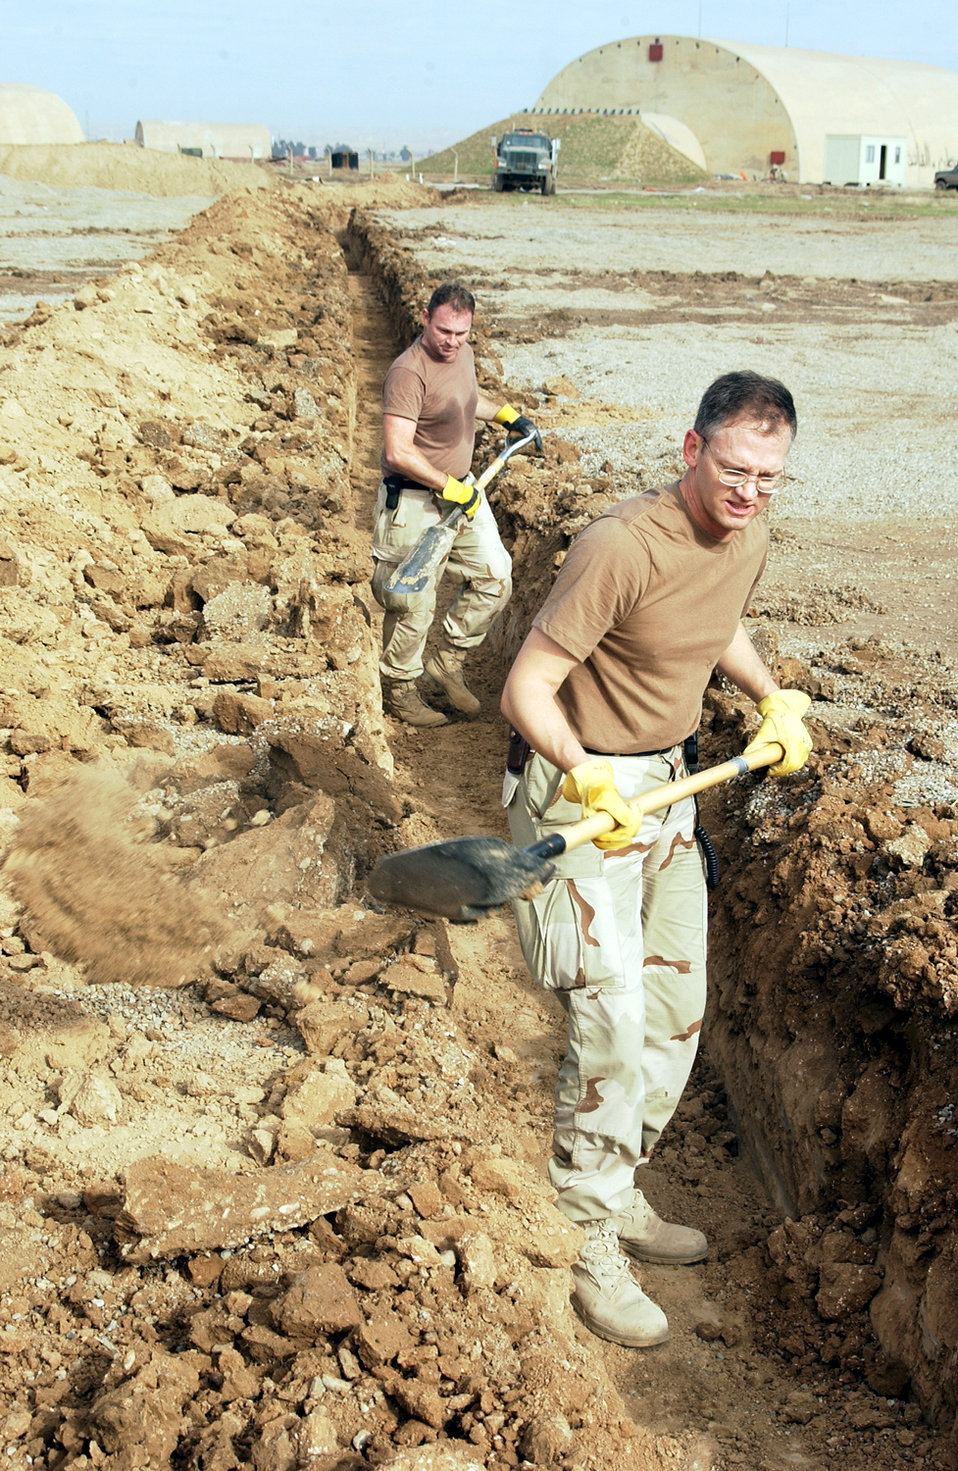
Entrenched

KIRKUK AIR BASE, Iraq -- Maj. Jeffrey Holifield (front) and Chief Master Sgt. Curtis Fike help bury fiber optic and copper cable here. Airmen from the 506th Expeditionary Communications Squadron have installed more than 45,000 feet of cable to 55 facilities to support telephone and computer network communications for deployed forces. Holifield is the 506th ECS commander and Fike is the squadron's superintendent.